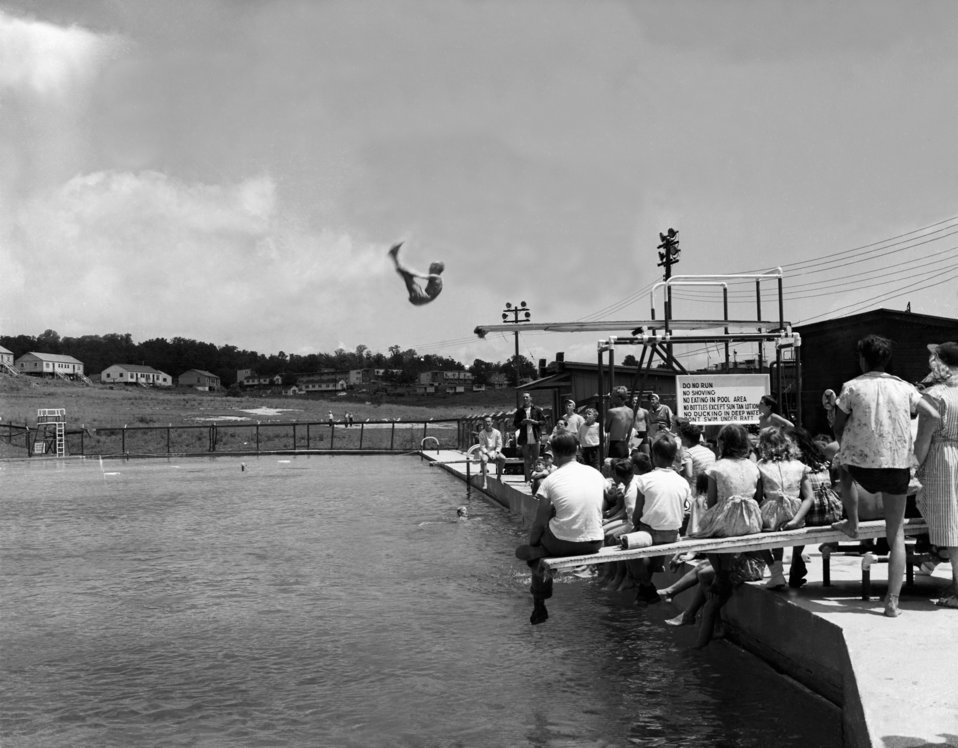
Diving Competition Oak Ridge Pool

005138-7d DOE photo by Lillian Stokes

Diver with spectators at Oak Ridge pool Oak Ridge Tennessee 8/5/1948